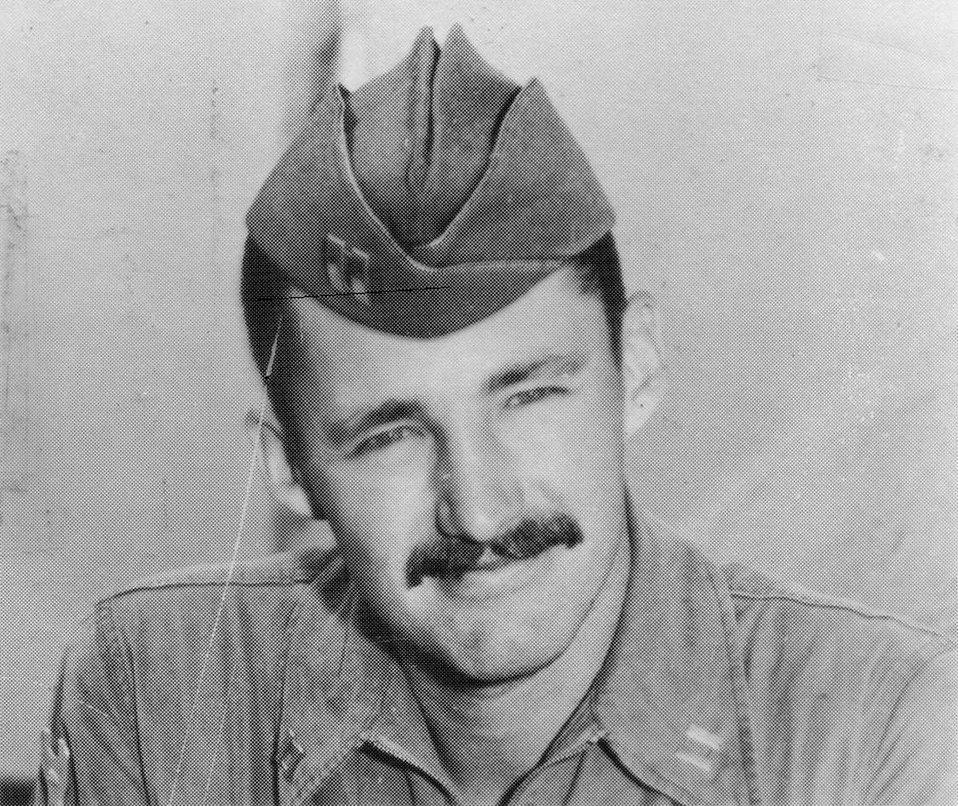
51st Fighter Wing Aces

Capt. Dolph Overton became the ninth ace of the wing on Jan. 24, 1953. He achieved this status in the shortest time of any pilot during the war with five aerial victories in four days. Capt. Overton was assigned to the 16th Fighter-Interceptor Squadron.